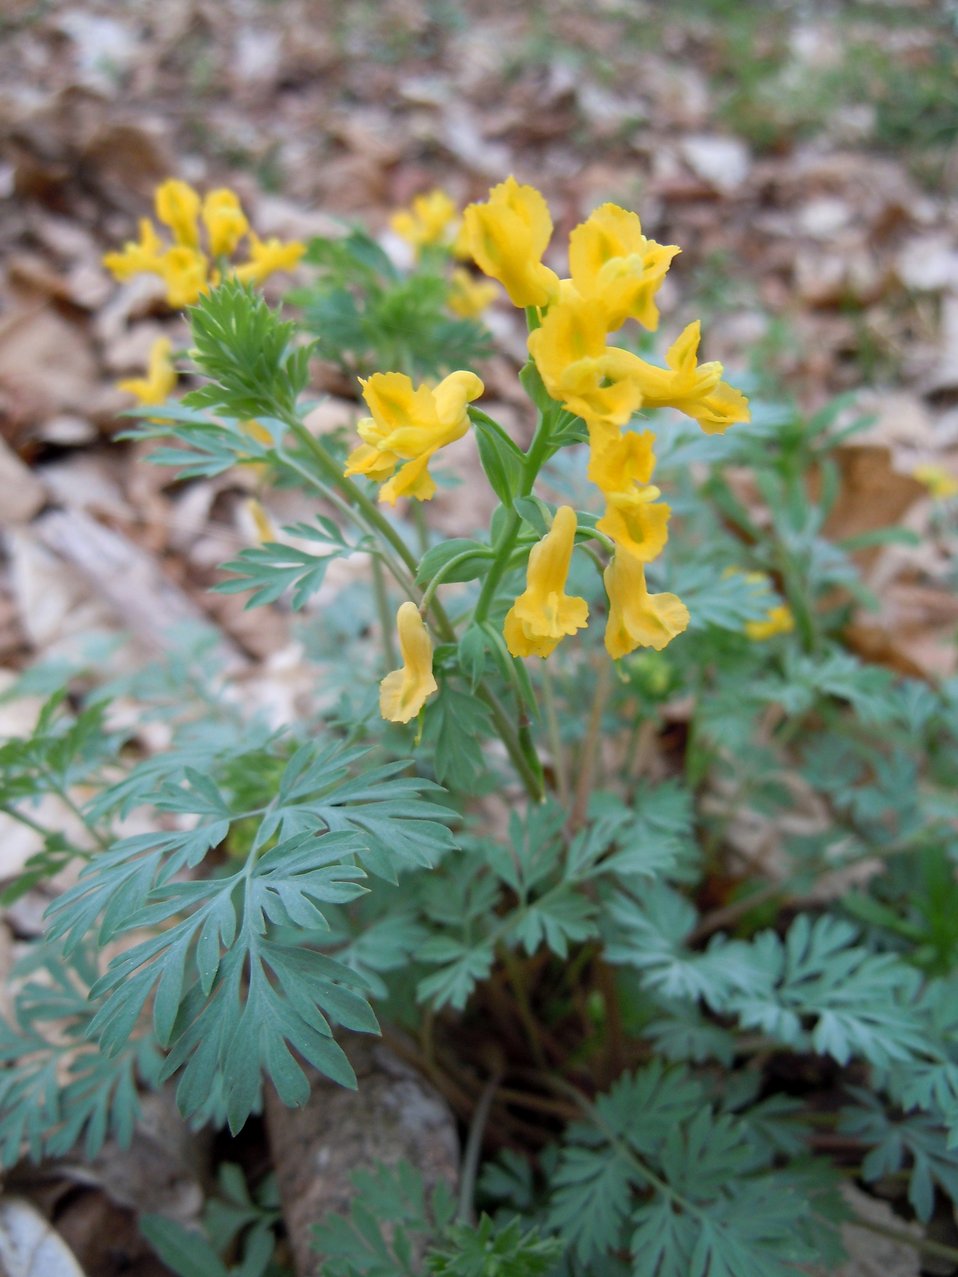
Slender Corydalis